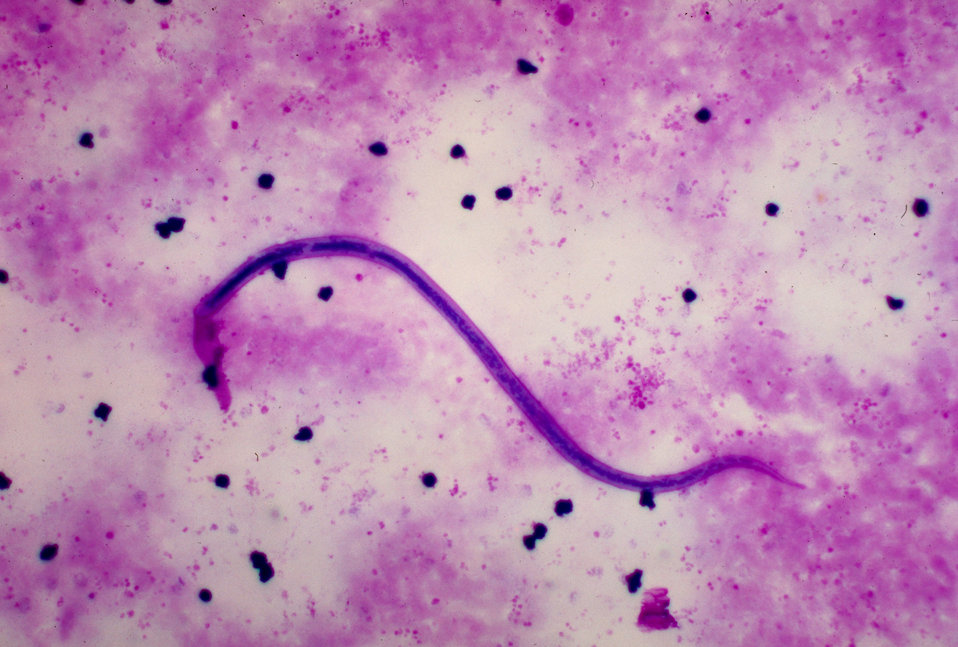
This is a micrograph of a Wuchereria bancrofti microfilaria in a thick blood smear using Giemsa stain technique.